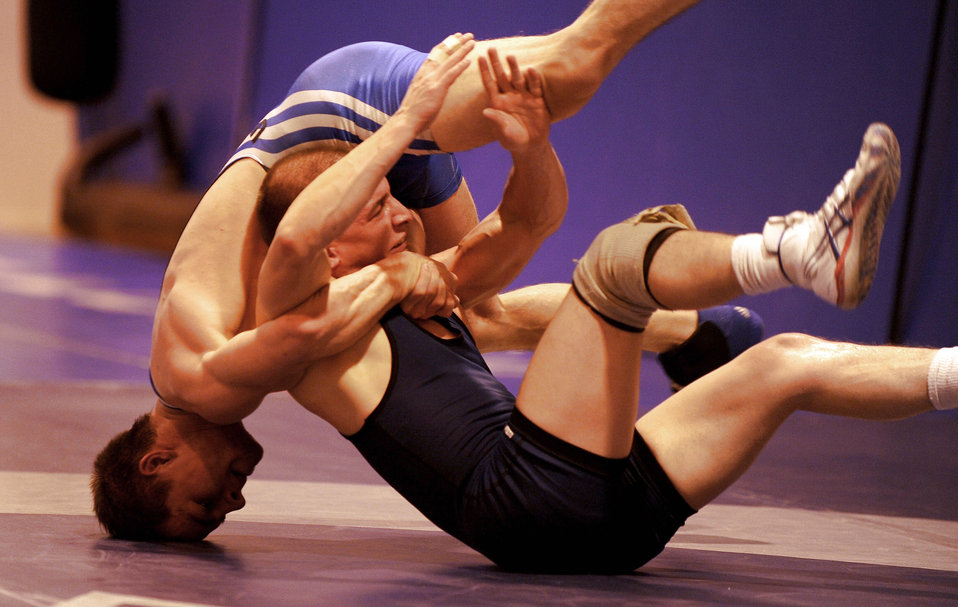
11 Airmen selected for Air Force wrestling team

Airman 1st Class Tyler Moore wrestles Senior Airman Christopher Wise during a training match for the Air Force Wrestling Camp Feb. 25 at Mountain Home Air Force Base, Idaho. Airman Moore, a native of Nampa, Idaho, is one of 11 Airmen selected to represent the Air Force during the Armed Forces Wrestling Championships hosted at Mountain Home AFB. Training for the service-wide competition begins here March 7. Airman Moore is from Aviano Air Base, Italy, and Airman Wise is stationed at Moody AFB, Ga.